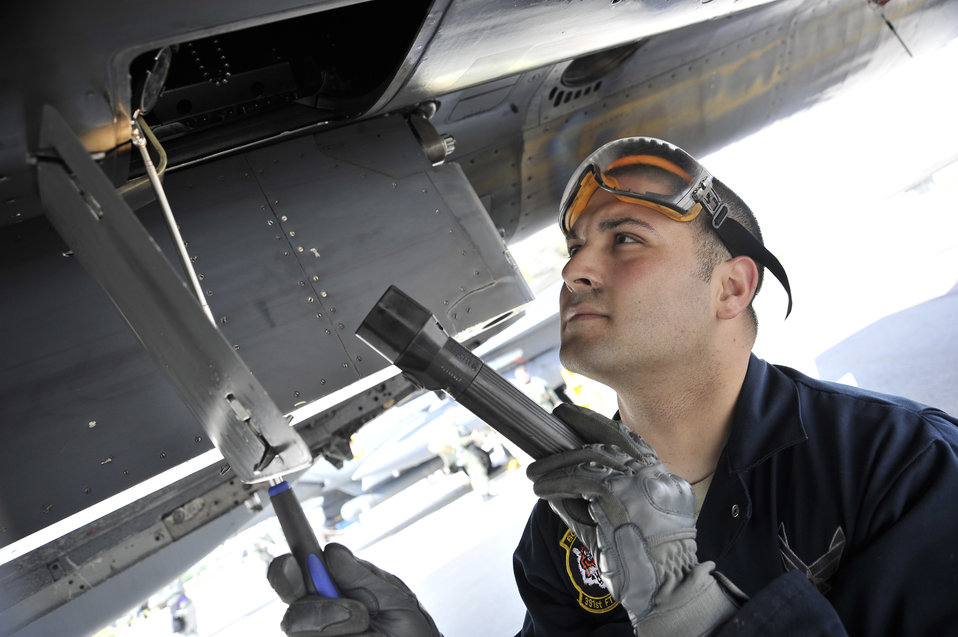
NORTHERN EDGE 2011 exercise

Senior Airman Mitchell Lake conducts a maintenance inspection on an F-15E Strike Eagle June 13, 2011, during the NORTHERN EDGE 2011 exercise at Eielson Air Force Base, Alaska. Airman Lake is a crew chief assigned to the 391st Aircraft Maintenance Unit at Mountain Home Air Force Base, Idaho.